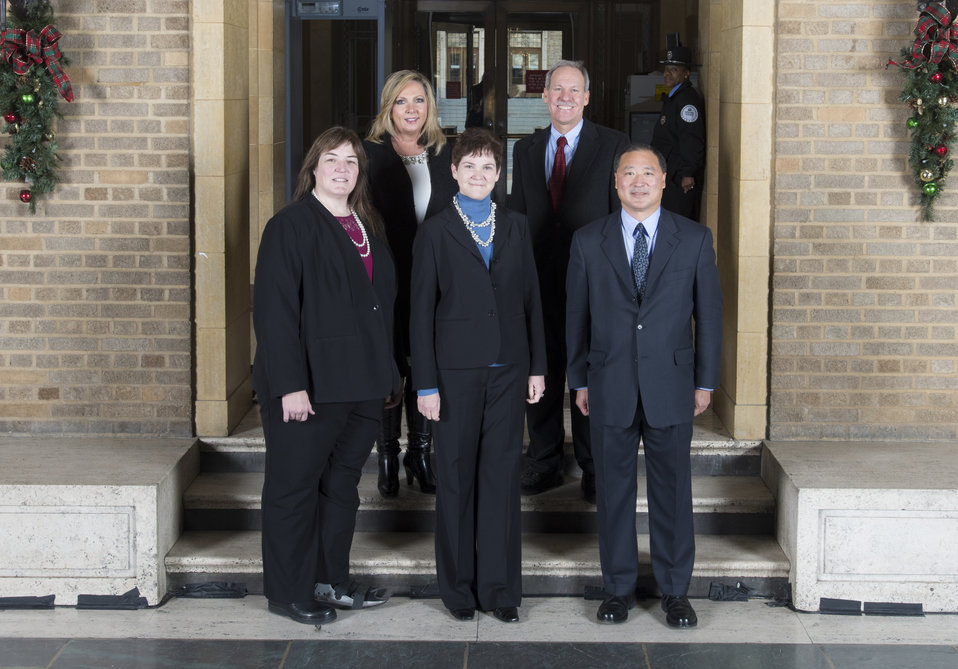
Agriculture Deputy Secretary Krysta Harden stands with Fresno SC2 Agricultural Team, Rural Development from Davis, CA on the patio at the U.S. Department of Agriculture (USDA) in Washington, D.C. on Wednesday, Dec. 11, 2013. The team received the Secretary’s Honor Award for leading a successful White House Strong Cities Strong Communities initiative in Fresno by implementing a regional economic strategy including agriculture technology and broadband.